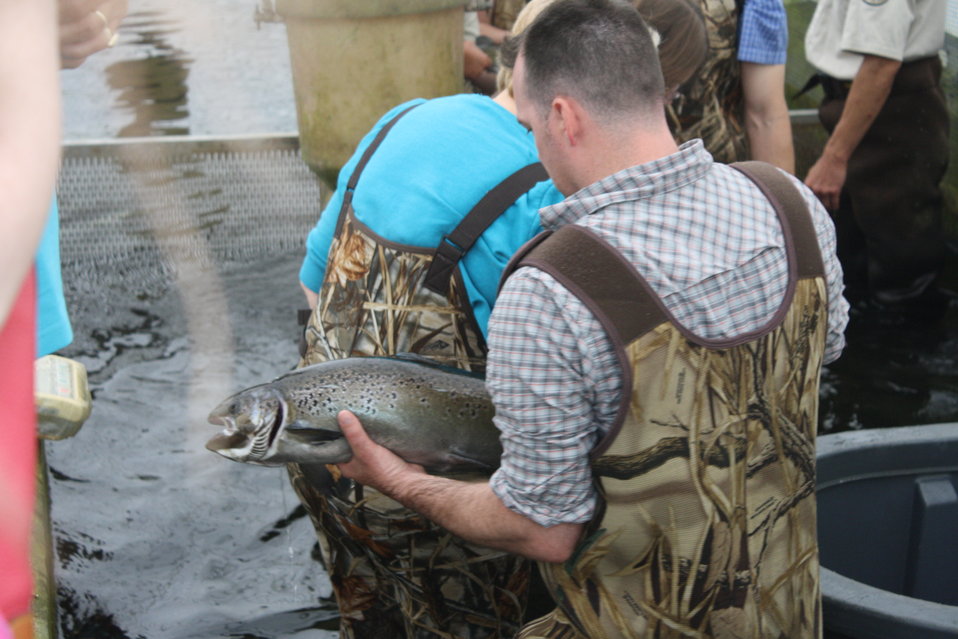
Nashua National Fish Hatchery welcomes regional office employees

Removing Atlantic salmon for weighing and measuring.